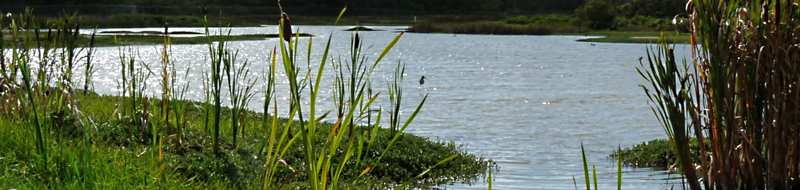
Pearl Harbor NWR - Honouliuli unit

The Honouliuli Unit contains two fresh water wetland impoundments that are intensively managed to provide habitat for a variety of waterbirds including Hawai‘i's endangered waterbirds and migrant waterfowl.